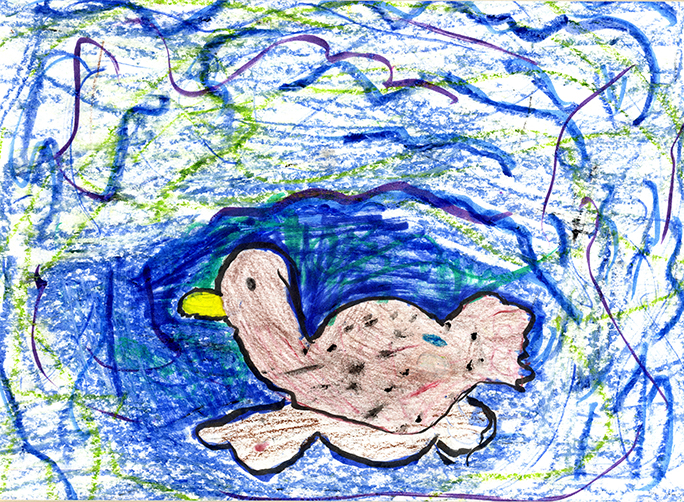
JRDuck2013VI

2013 Junior Duck Stamp Best of Show-U.S. Virgin Islands